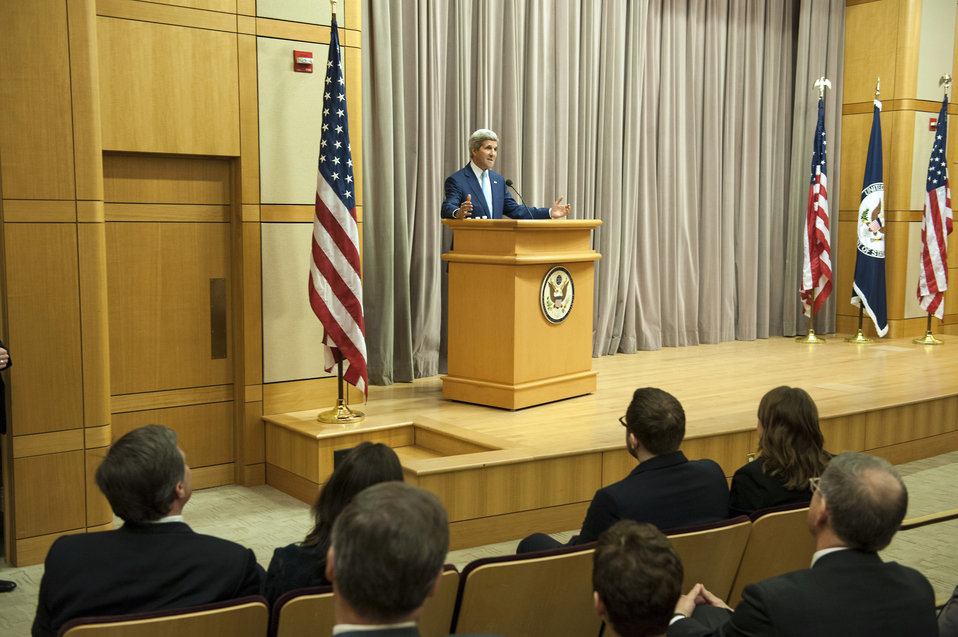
Secretary Kerry Introduces Historian Doug Brinkley

U.S. Secretary of State John Kerry introduces historian Douglas Brinkley at the Open Forum at the U.S. Department of State in Washington, D.C., on May 28, 2014.